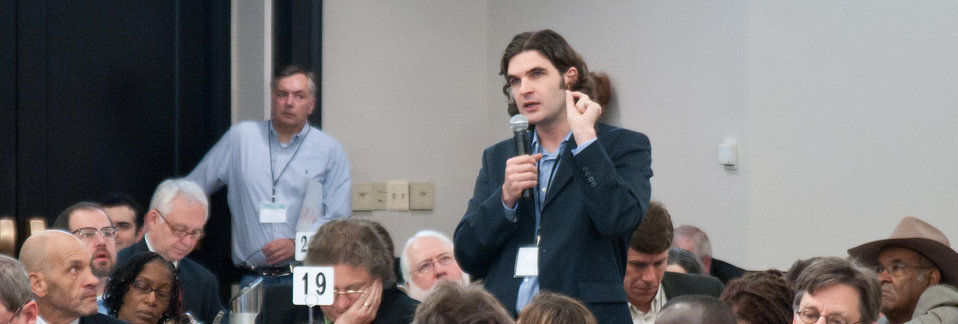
A participant (standing right) asks U.S. Department of Agriculture (USDA) Secretary Tom Vilsack a question about minority opportunities, during the Rural Wealth Creation and Livelihoods national conference for practitioners, researchers and policymakers, held at the Dupont Hotel, Washington DC, on Monday October 3, 2011. USDA partnered with the Ford Foundation to sponsor the conference.